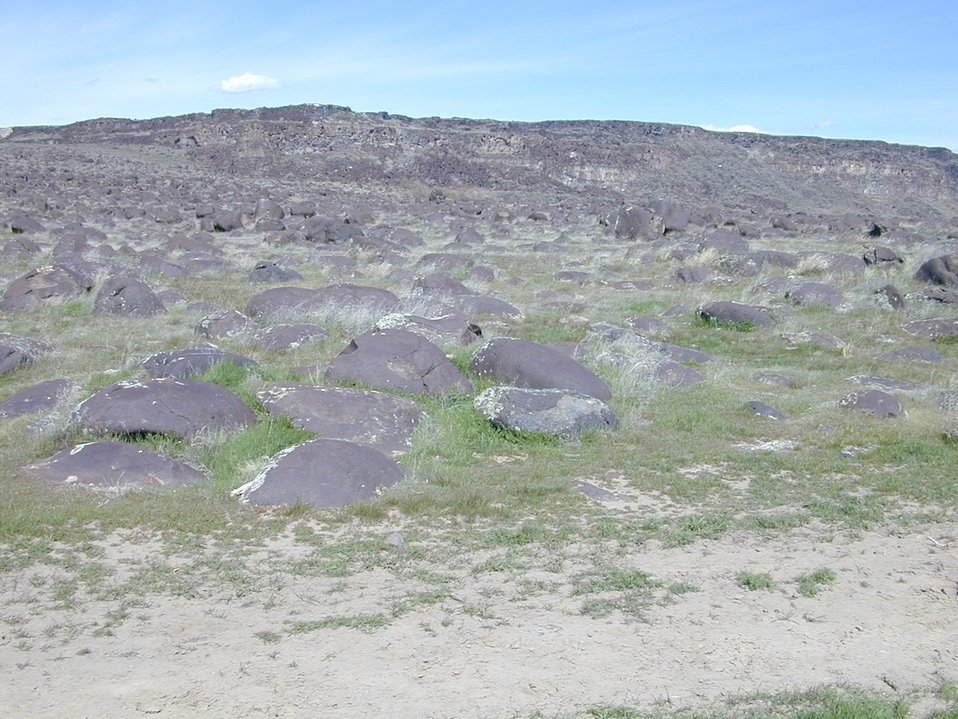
Snake River Birds of Prey National Conservation Area Lower Snake River District LSRD Snake River Canyon